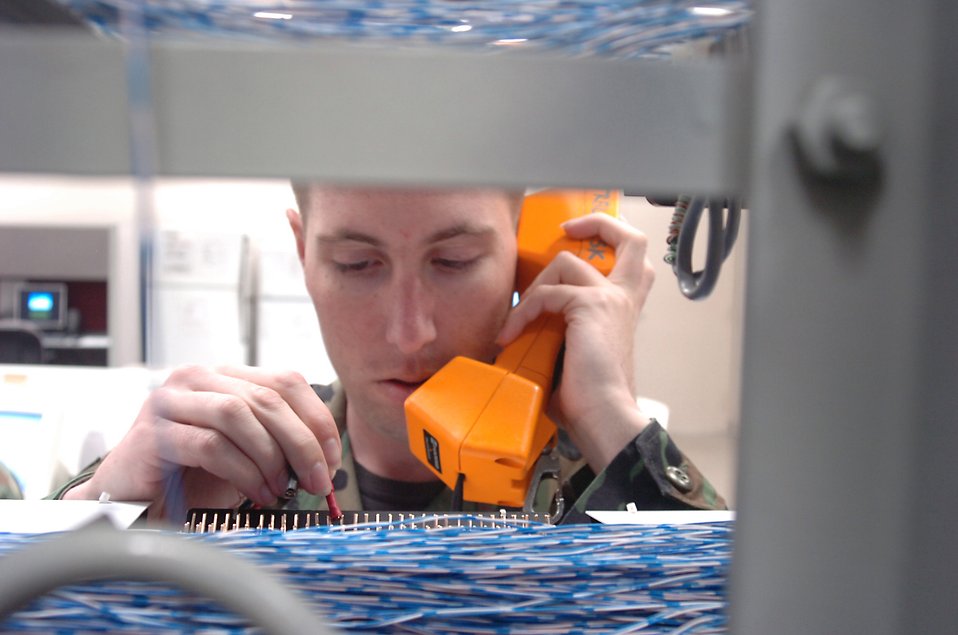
Are you there?

ANDREWS AIR FORCE BASE, Md. (AFPN) -- Senior Airman David Lanthier troubleshoots a telephone circuit inside the voice network systems maintenance shop Feb. 13. Airman Lanthier is assigned to the 89th Communications Squadron as a voice network systems journeyman. The shop maintains about 17,000 telephone lines and troubleshoots a daily average of 10 to 12 telephone problems basewide.